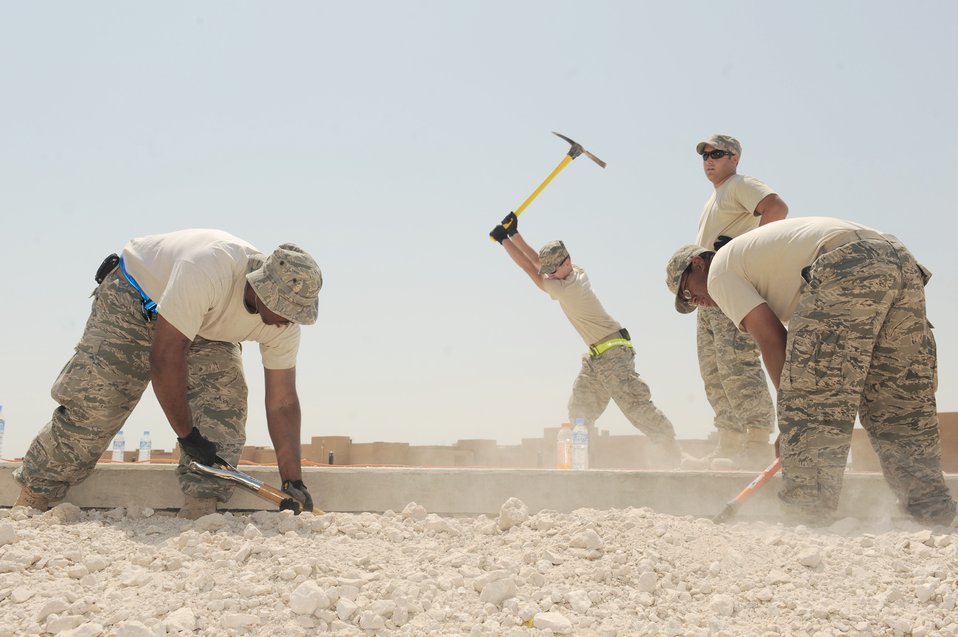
Hot and dusty work

Airmen from the 379th Expeditionary Civil Engineer Squadron electrical systems section dig trenches for new area lighting May 7, 2010, at an air base in Southwest Asia.